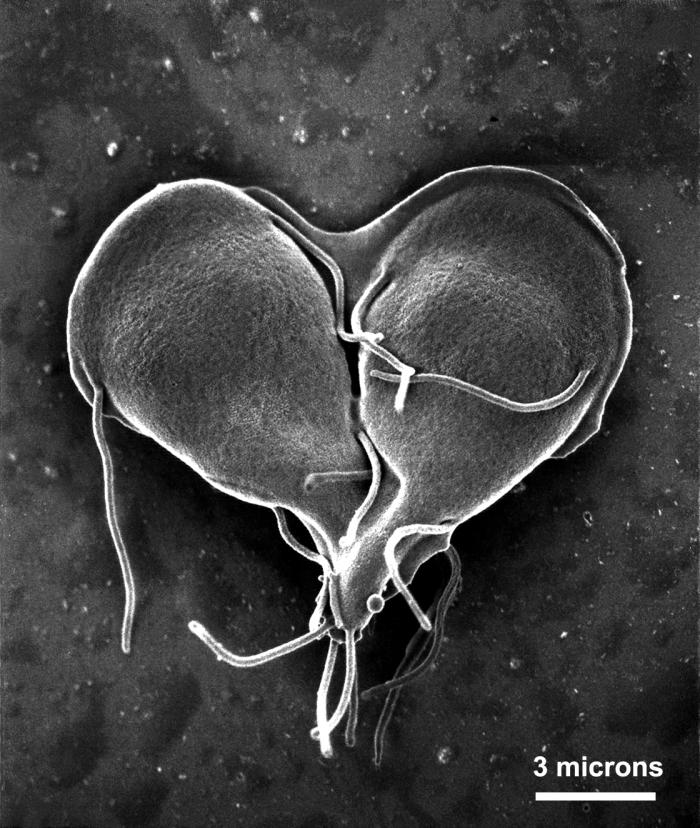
This scanning electron micrograph (SEM) depicted a Giardia lamblia protozoan that was about to become two, separate organisms, as it was caught in a late stage of cell division, producing a heart-shaped form.